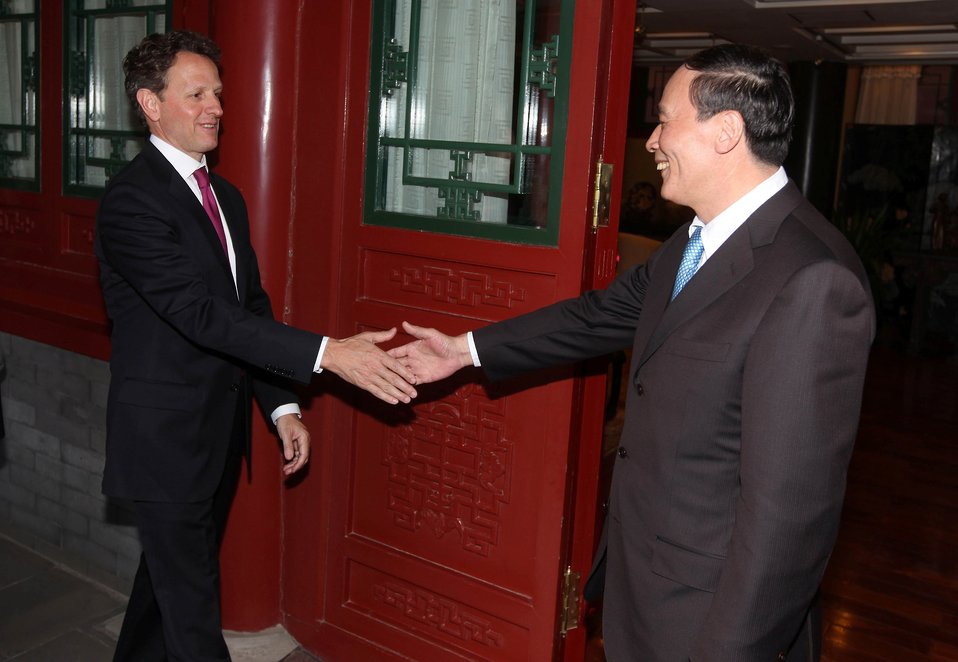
SandED, 5/23/10

Secretary Geithner greets Vice Premier Wang Qishan before their working dinner Sunday in Beijing.